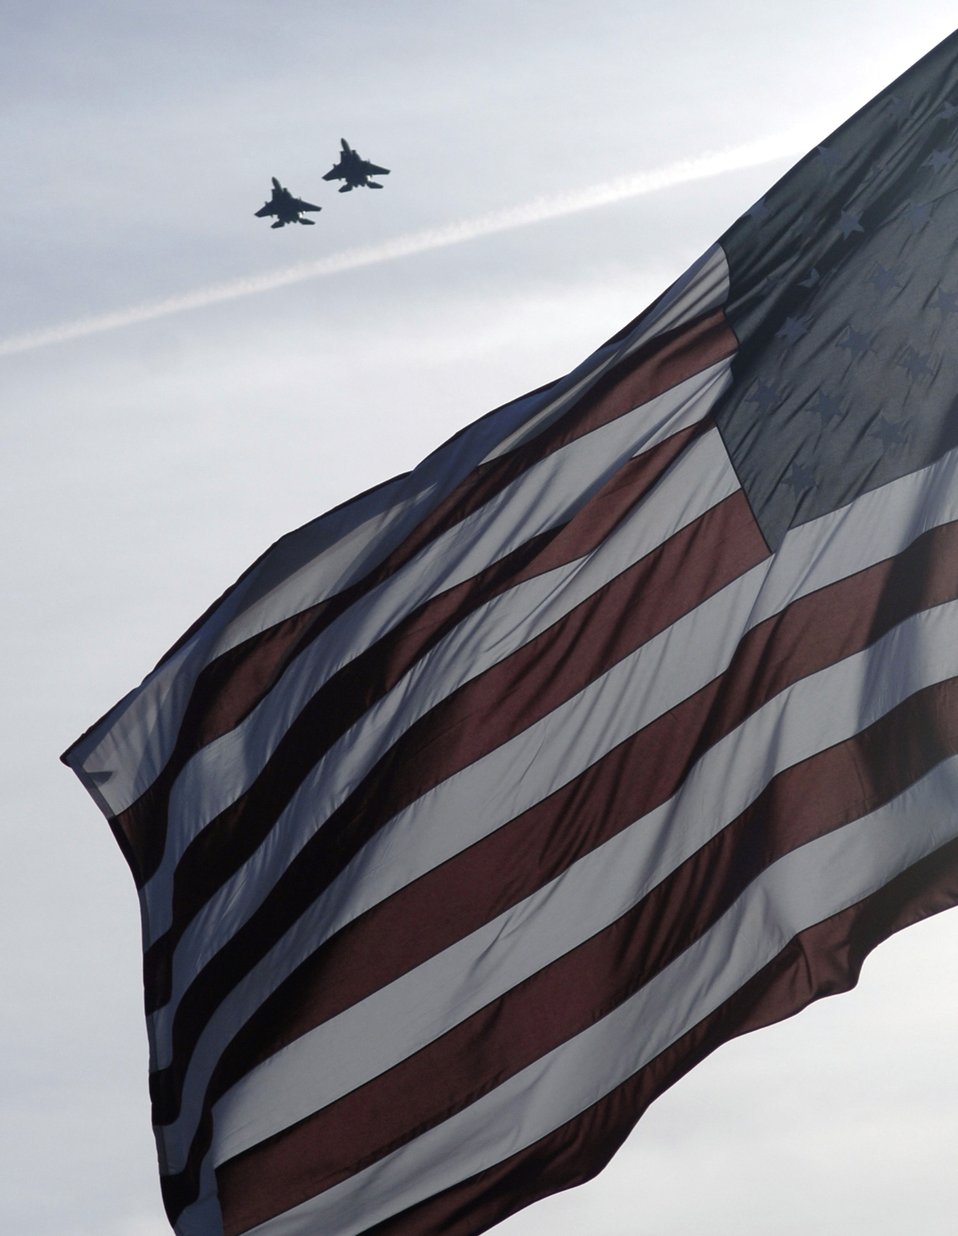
Final flyby

U.S. Air Force F-15E Strike Eagle aircraft do a flyby in preparation for former President Gerald R. Ford's internment Jan. 3 in Grand Rapids, Mich.